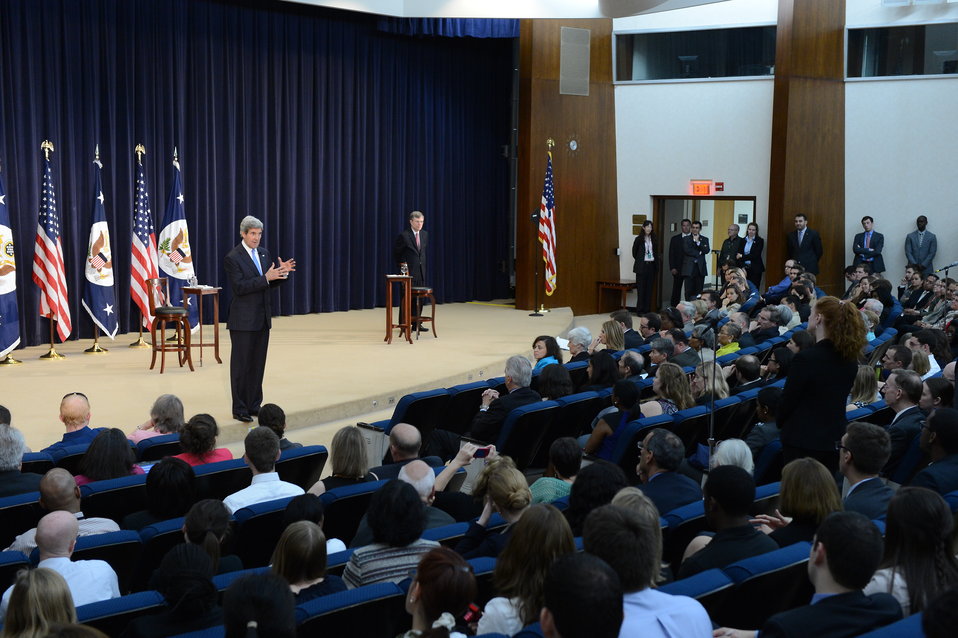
Secretary Kerry Responds to a State Department Employee's Question

U.S. Secretary of State John Kerry responds to a question from a Department employee during a town hall meeting at the U.S. Department of State in Washington, D.C., on May 30, 2013.